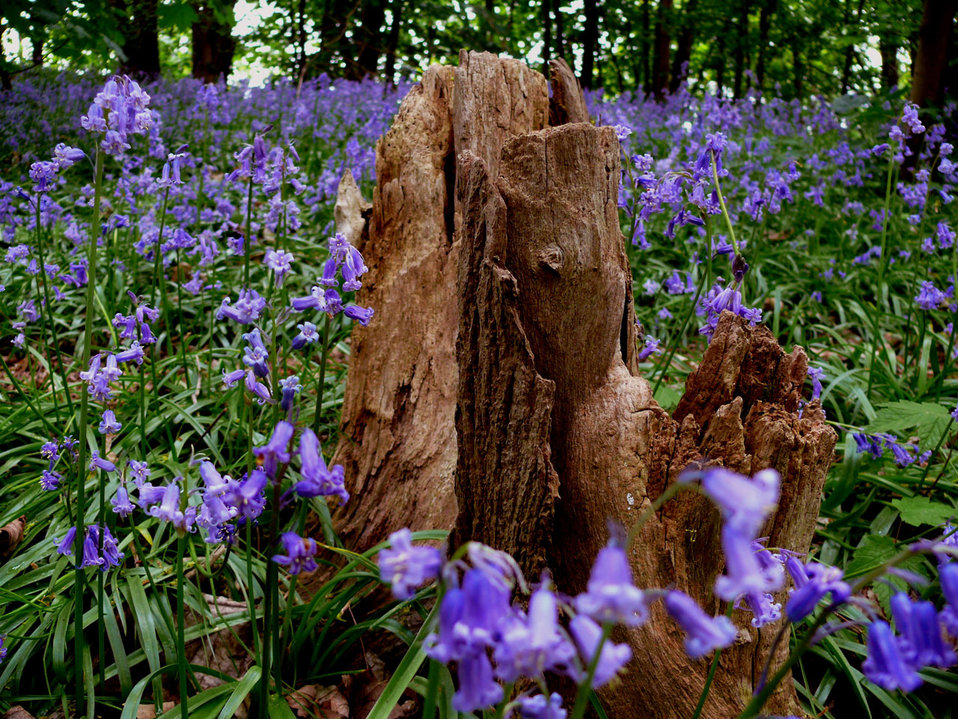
Bluebells everywhere.